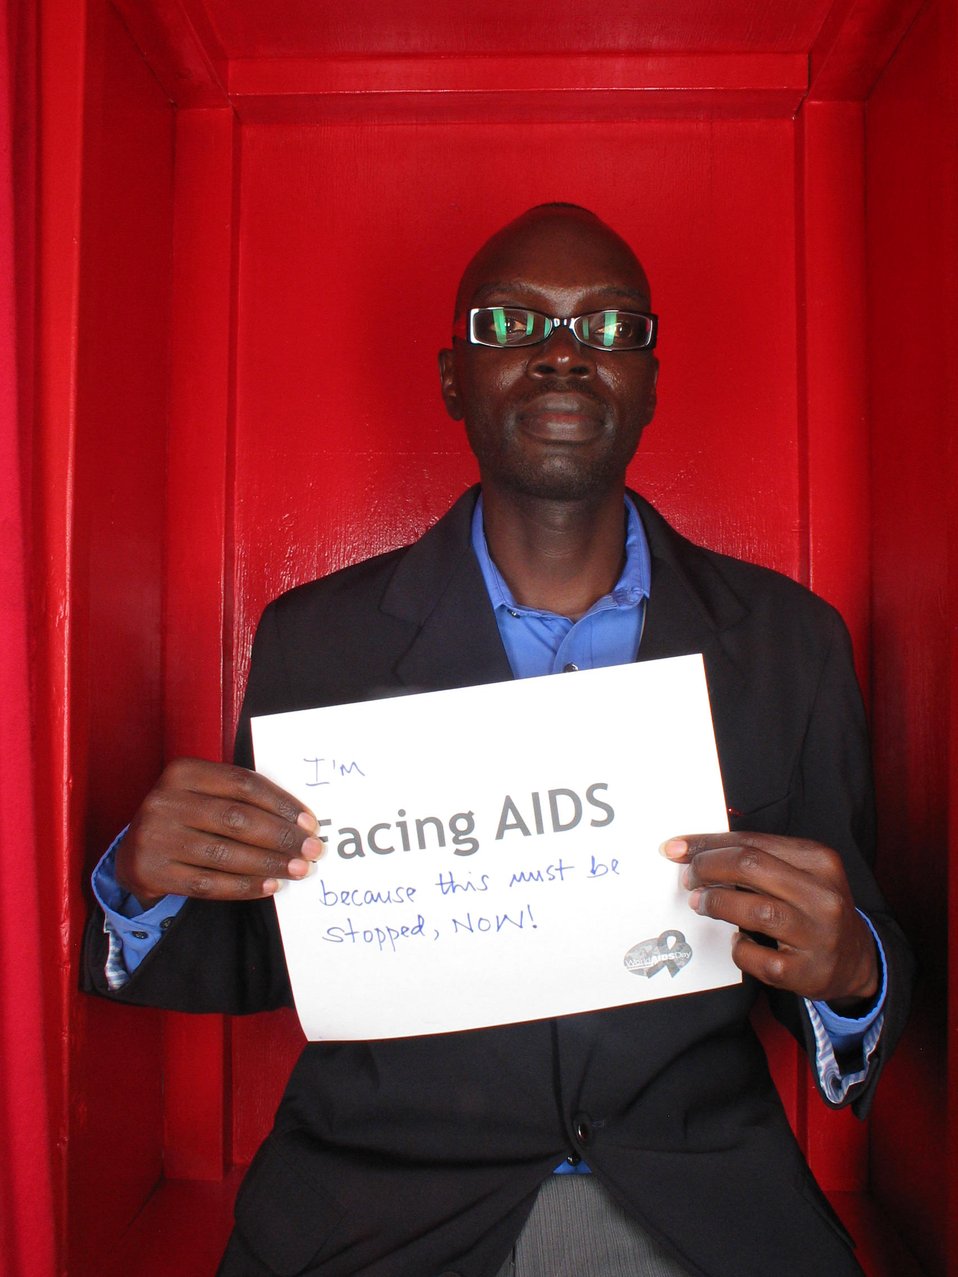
I'm Facing AIDS because this must be stopped.